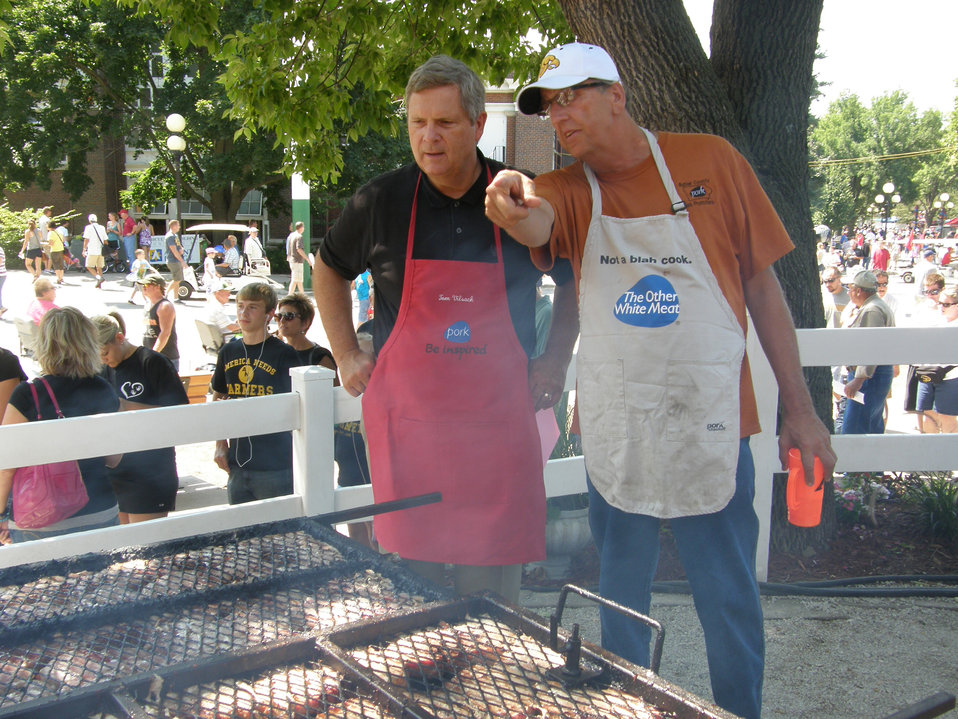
Agriculture Secretary Tom Vilsack's at the Pork Producers tent where he learned about the preparation of pork chops during the White House Rural Forum at the Iowa State Fair, IA.